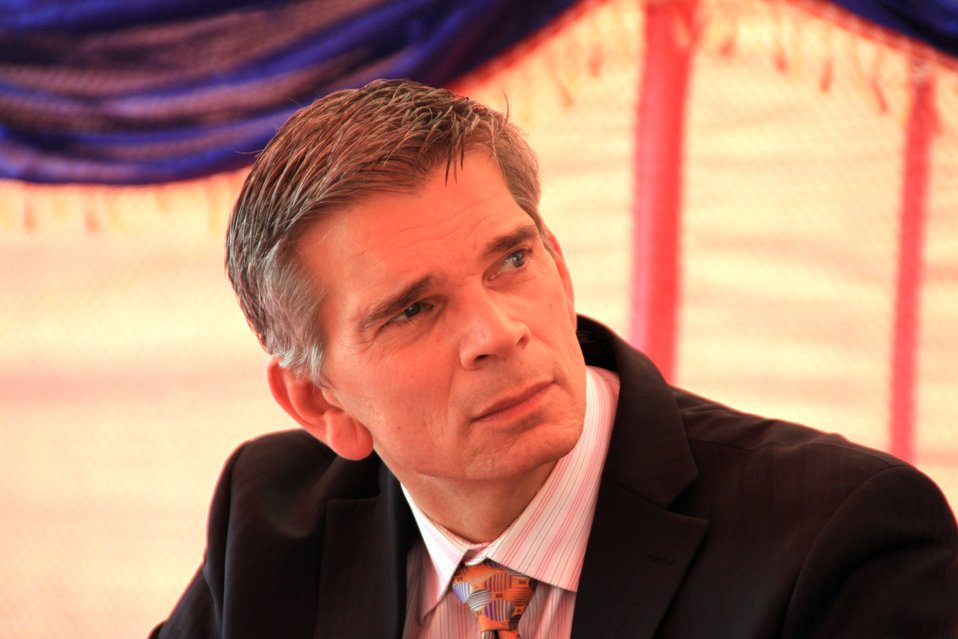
Badam Bagh Farm